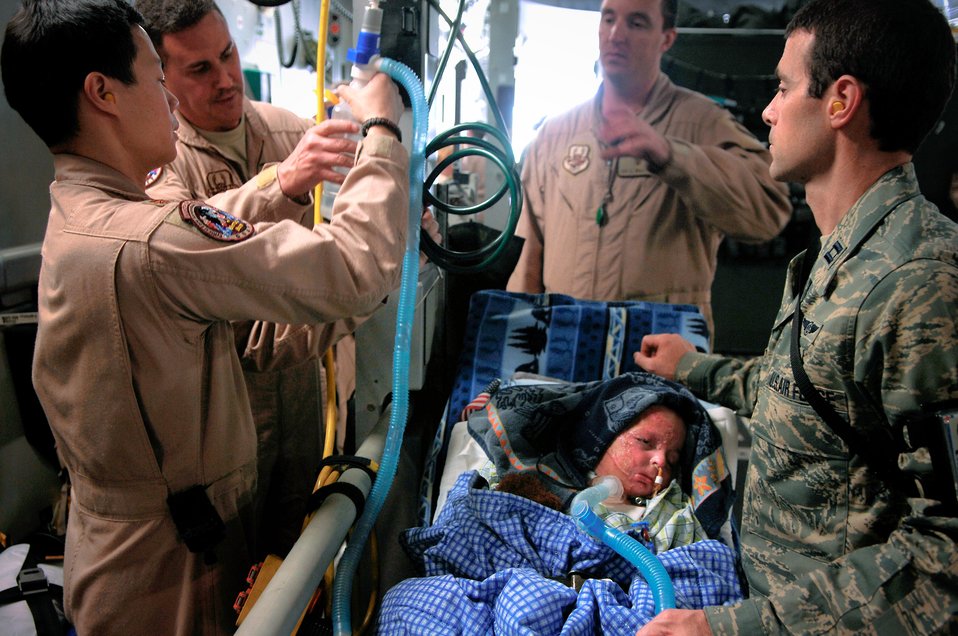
Handle with care

Members of the 332nd Expeditionary Aeromedical Evacuation Flight's Critical Care Transportation Team prepare Al Amreeki, a 3-year-old Iraqi burn victim, for a flight to the United States March 21. The Shriners Hospitals for Children-Cincinnati will provide ongoing treatment and rehabilitation.